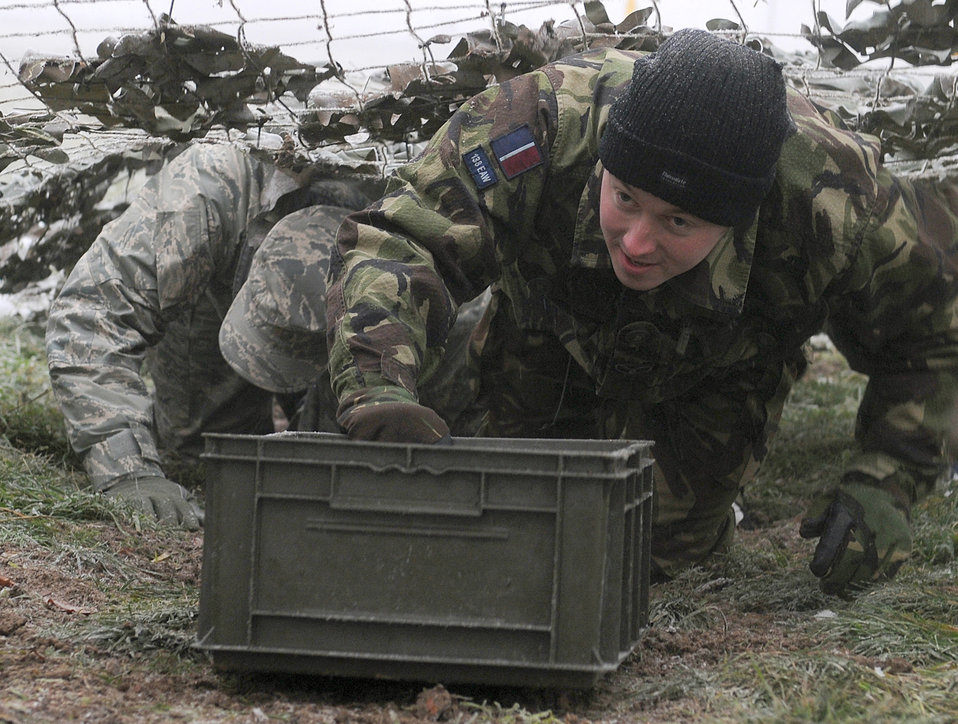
Cross-country training pools experience, skills

Royal Air Force Senior Aircraftman Technician Martin Dovey, of the 31st Squadron at Royal Air Force Marham, England, brings a plastic box through a net tunnel as part of a team building exercise during Leader, Ethos and Air Power Training Day Dec. 6, 2010, at RAF Marham. Participants in station LEAP Day were taken from all sections of RAF Marham and RAF Mildenhall, England.